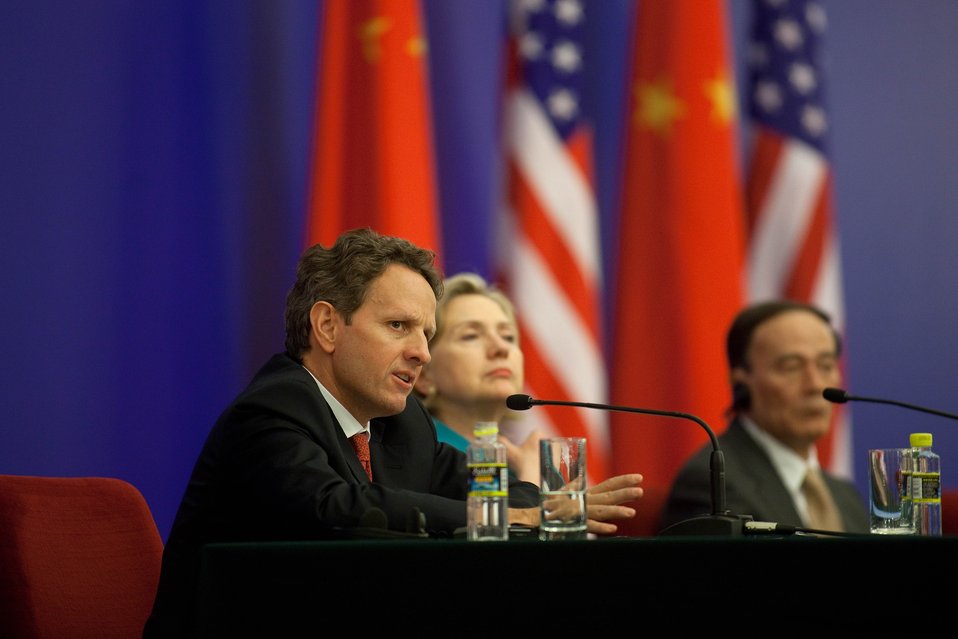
SandED 5/25/10

Secretary Geithner spoke at the second round of the U.S.-China Strategic and Economic Dialogue at the Great Hall of the People.